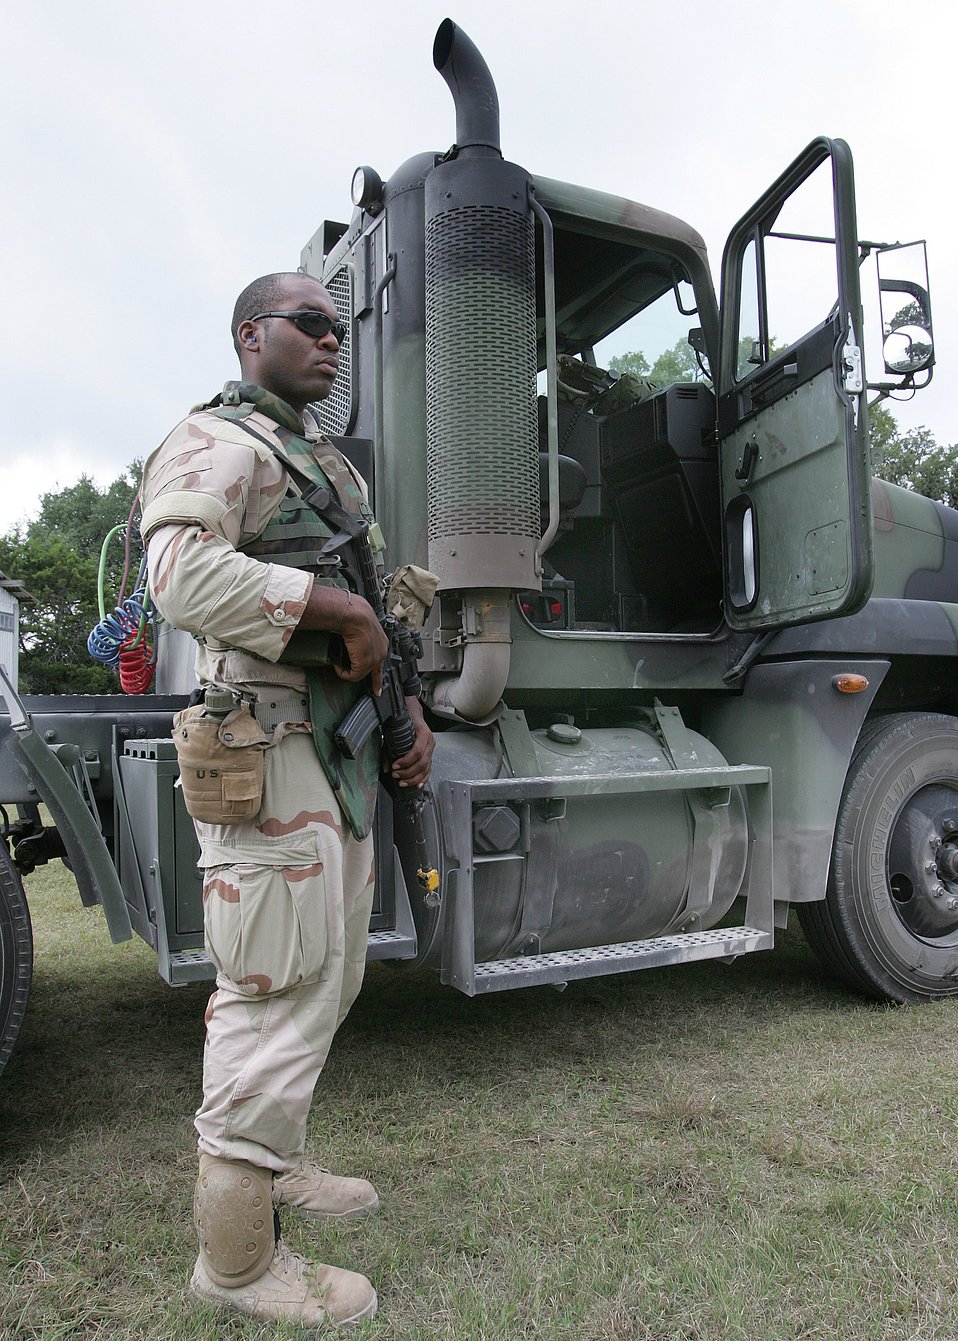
Combat convoy training

CAMP BULLIS, Texas -- Airman 1st Class Rahmon Harrell stands watch beside the tractor-trailer he drove during a convoy exercise at the Basic Combat Convoy Course here. He is from McGuire Air Force Base, N.J.